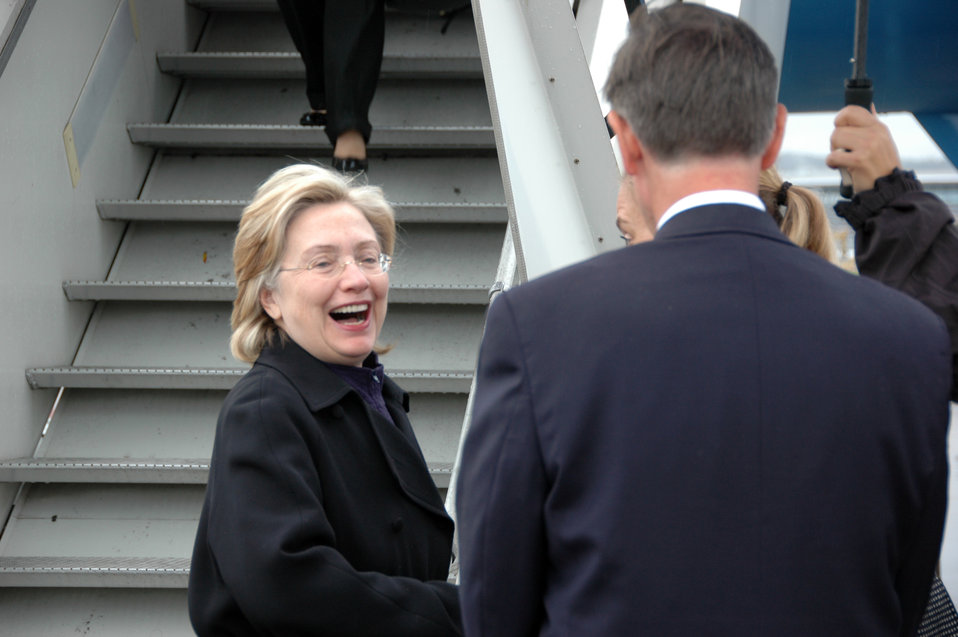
Secretary Clinton Arrives in Zurich

U.S. Secretary of State Hillary Rodham Clinton is greeted by U.S. Ambassador to Switzerland Donald S. Beyer and Ms. Alexandra Baumann (Federal Department of Foreign Affairs) during her arrival in Zurich, Switzerland October 9, 2009.